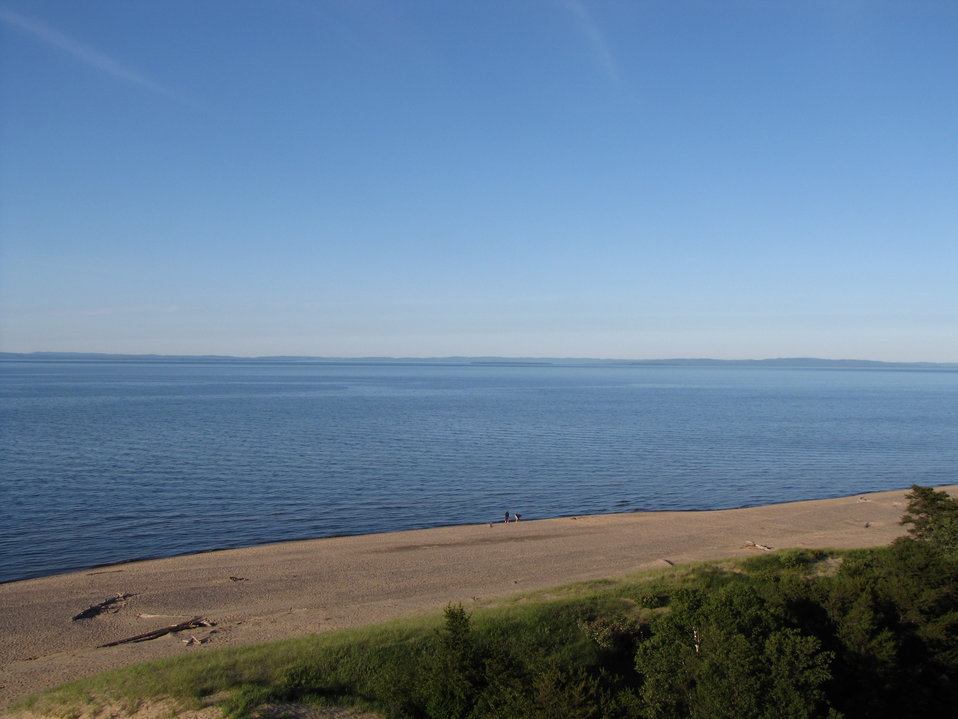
Beach at Whitefish Point Unit

View of Whitefish Point Unit of Seney National Wildlife Refuge from a lighthouse.